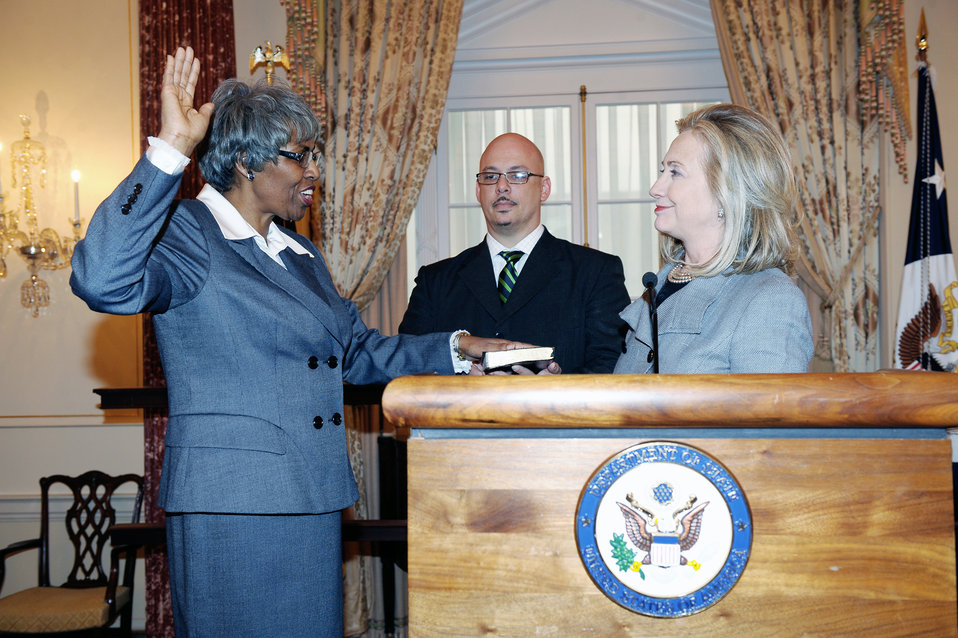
Secretary Clinton Holds a Swearing-In Ceremony for Joyce Barr as Assistant Secretary

U.S. Secretary of State Hillary Rodham Clinton holds a swearing-in ceremony for Joyce Barr as Assistant Secretary of State for Administration at the U.S. Department of State in Washington, D.C., on February 8, 2012.